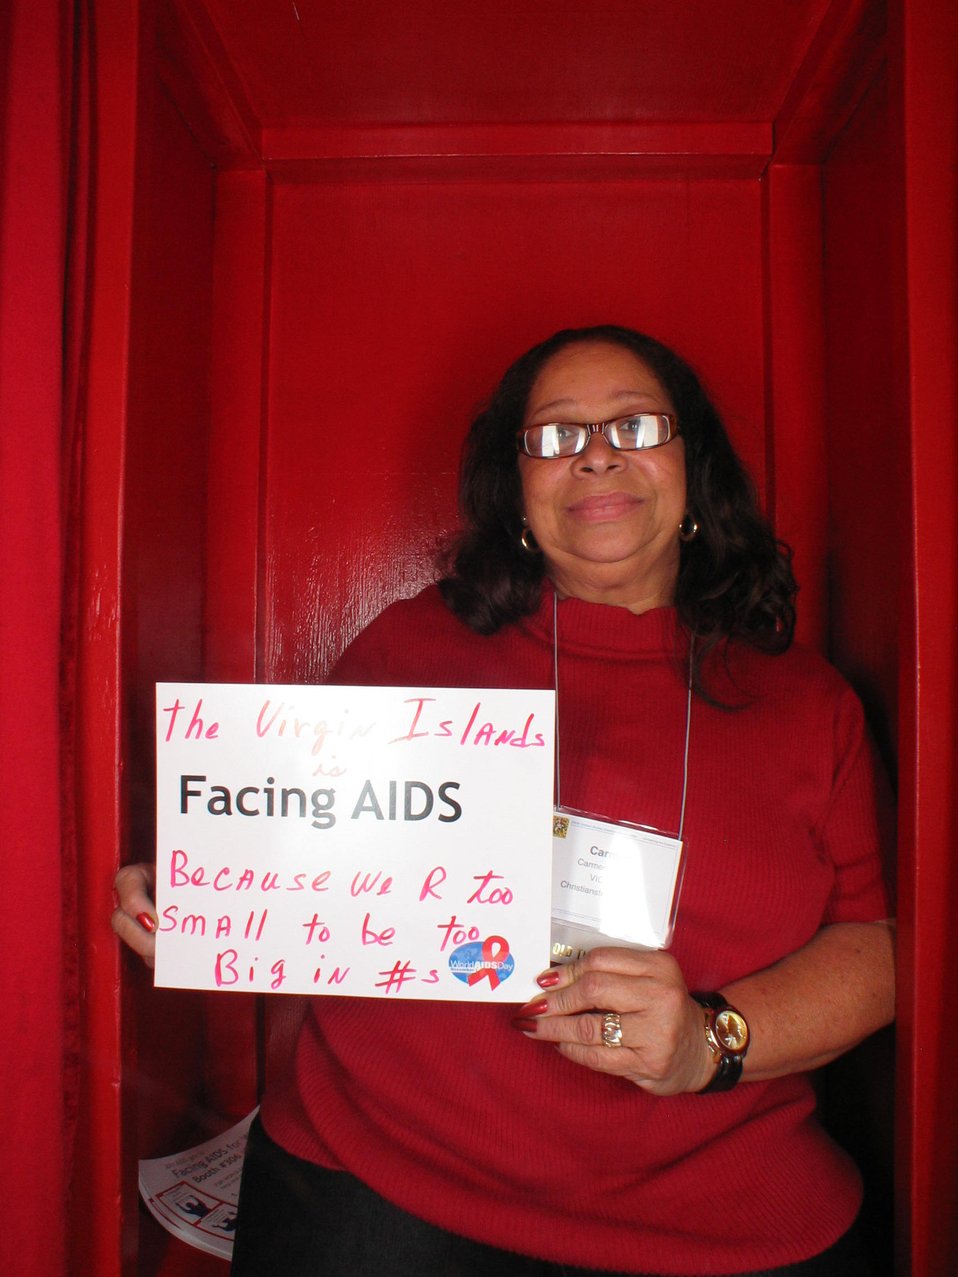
Facing AIDS because we are too small to be this big in #s